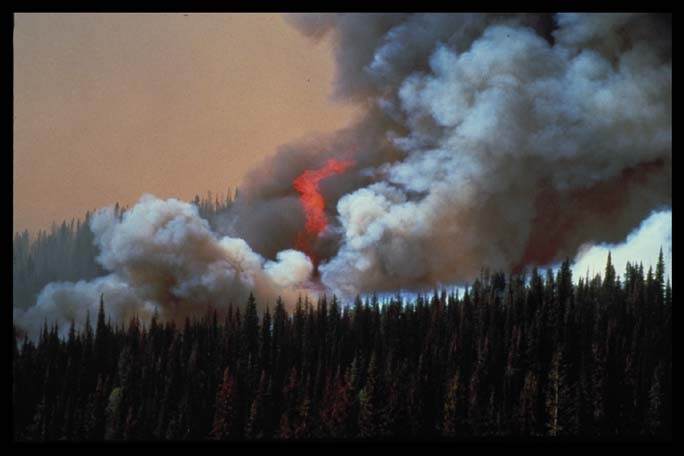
Wildland fire